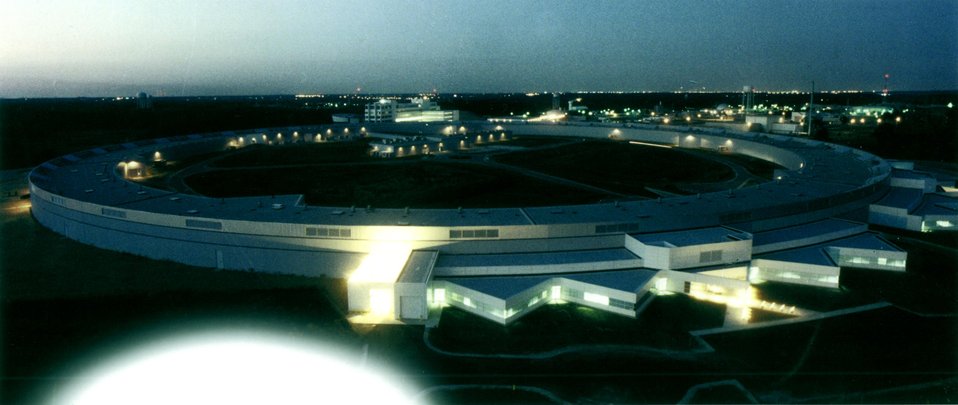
ARGONNE NATIONAL LABORATORY'S ADVANCED PHOTON SOURCE.

ARGONNE'S ADVANCED PHOTON SOURCE PROVIDES THE WORLD'S MOST BRILLIANT X-RAY BEAMS FOR MATERIALS RESEARCH. THE APS SUPPORTS THOUSANDS OF EXPERIMENTS BY INDUSTRY, UNIVERSITY AND GOVERNMENT RESEARCHERS, PROVIDING THE SCIENTIFIC COMMUNITY WITH UNIQUE INSIGHT INTO THE PROCESSES OF NATURE, AS WELL AS LEADING INDUSTRY TO NEW TECHNOLOGIES.